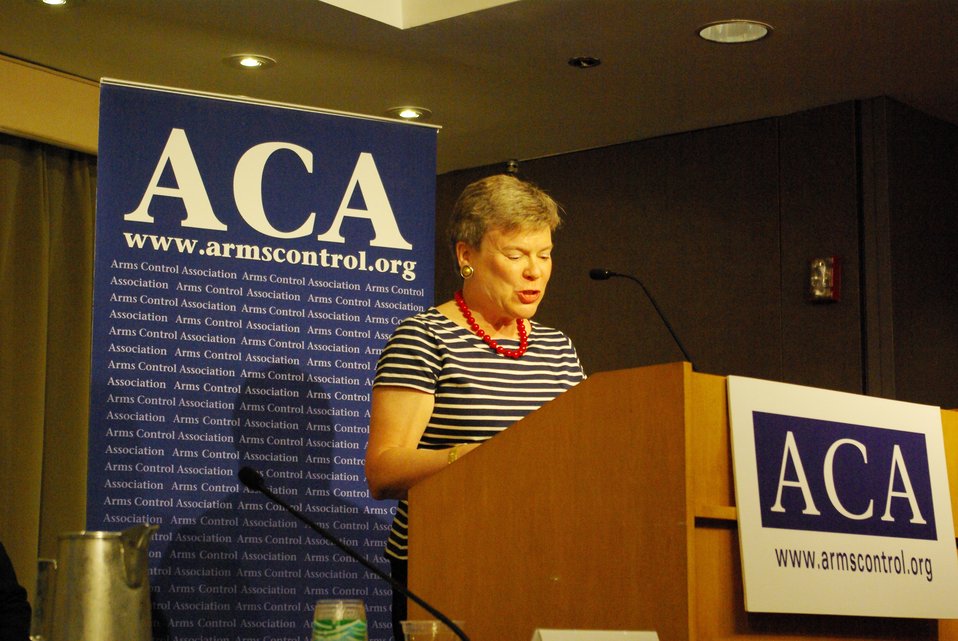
Under Secretary Gottemoeller Delivers Remarks on U.S. Arms Control Priorities

Acting Under Secretary for Arms Control and International Security Rose Gottemoeller delivers remarks on the Administration’s arms control priorities at the Arms Control Association’s annual meeting in Washington, D.C., on June 4, 2012.